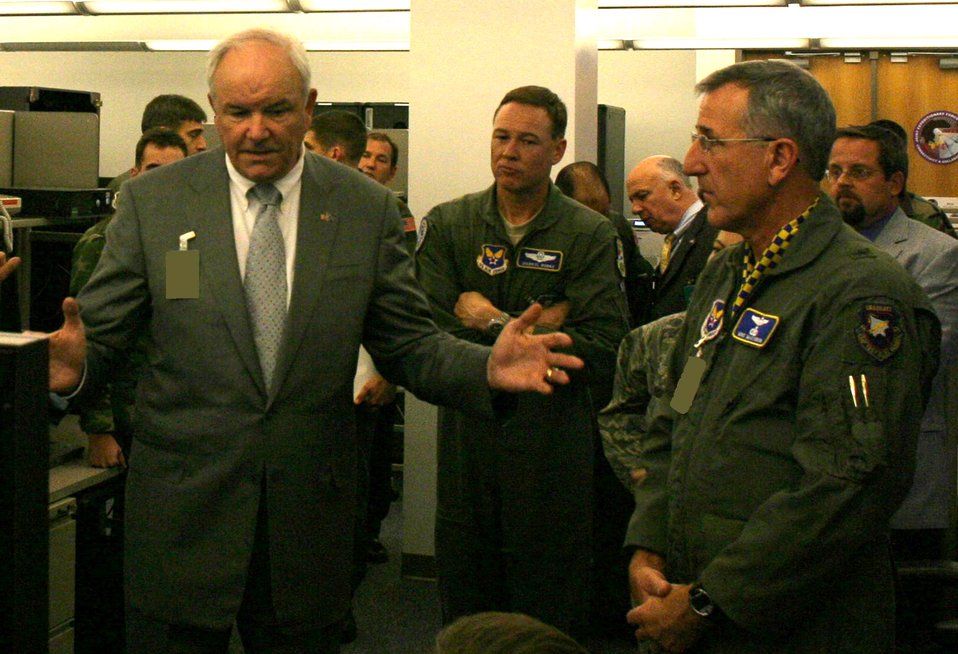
Joint Expeditionary Force Experiment 2008 underway

Secretary of the Air Force Michael Wynne (left) talks with Brig. Gen. Mike H. McClendon Nov. 13 during a tour of the Air Force Global Cyberspace Integration Center Hot Bench. Secretary Wynne visited the center for an inside look at the Joint Expeditionary Force Experiment 2008. General McClendon is the AF GCIC commander.